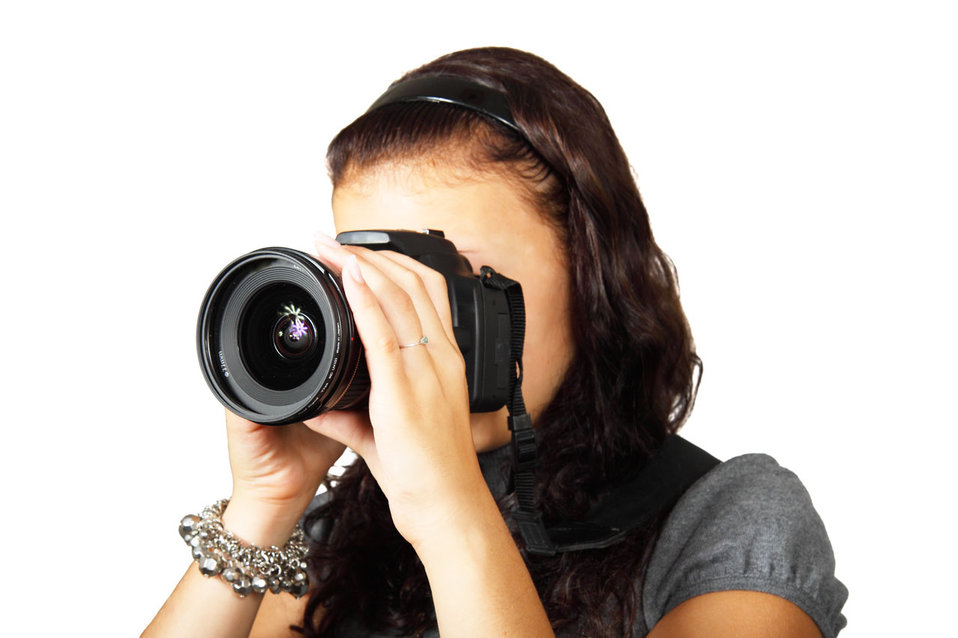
Young photographer using digital slr.